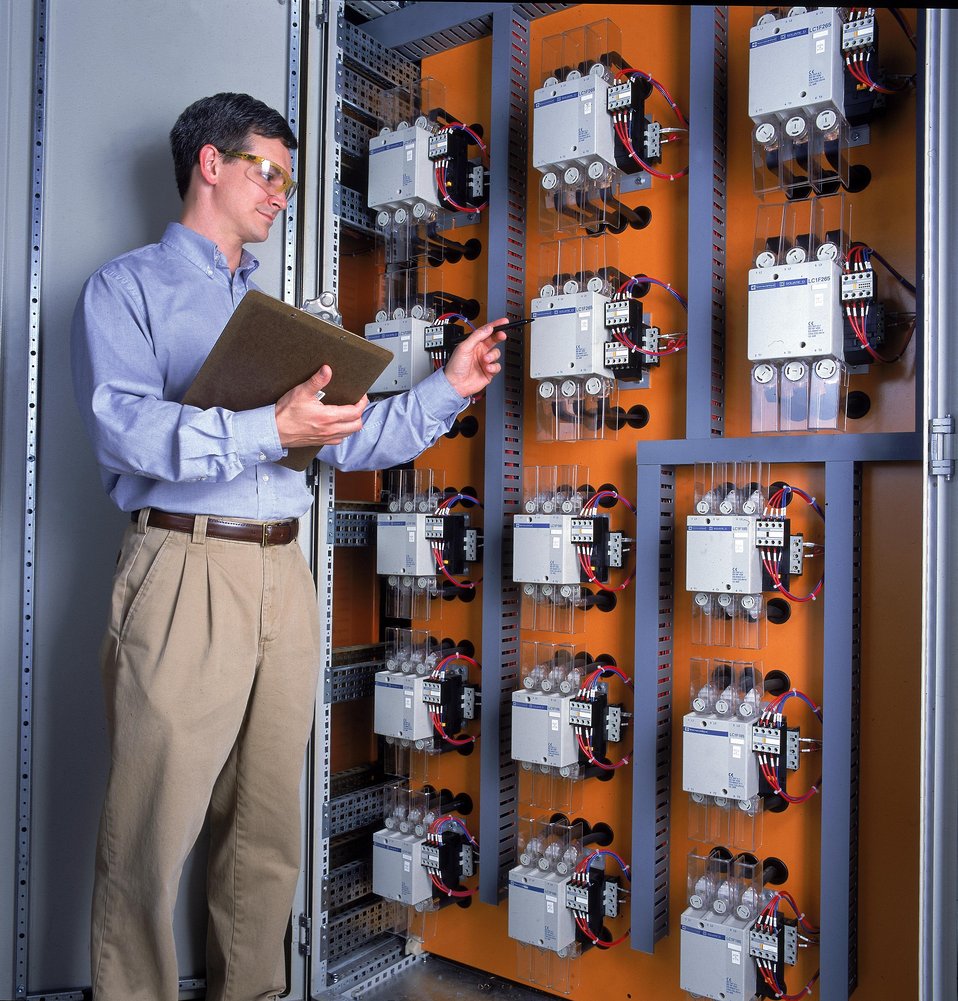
The Distributed Energy Reserves Hybrid Test Facility.

The facility tests how distributed generation sources connect and work together. At the facility, generation sources such as a 30 kilowatt micro-turbine, 60- or 100-kilowatt wind turbines, various sized generators, and a 1.8 kilowatt photovoltaics panel are connected to a 200 kilowatt grid simulating a utility this allows researchers to test how each of the sources work together and how they connect.